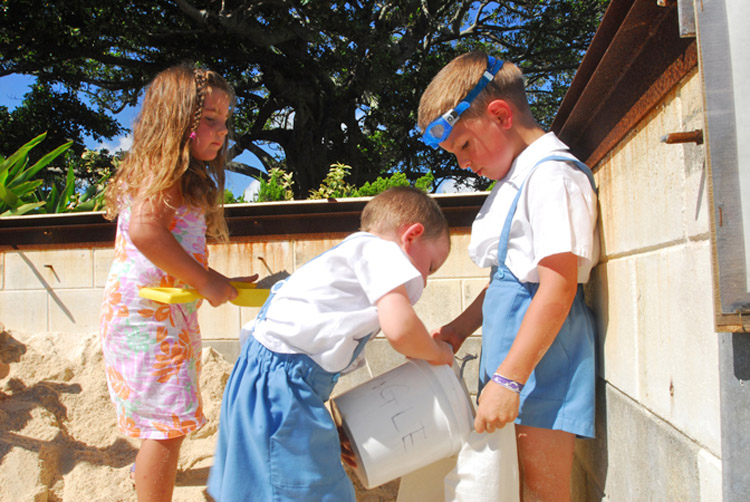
Kadena prepares for typhoon

Andrea Clary awaits while Phillip Clary fills up a sand bag held by Brendon Clary during preparation for Typhoon Man-Yi July 11 at Kadena Air Base, Japan. This is the first typhoon of 2007 for Okinawa. The three are children of Staff Sgt. Michael and Andrea Clary with the 18th Operations Support Squadron.